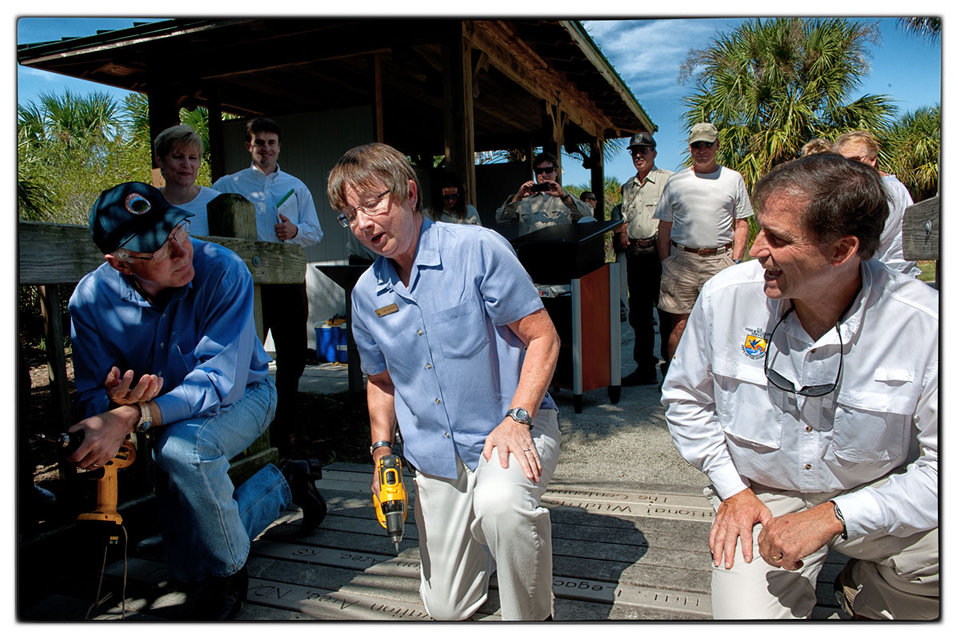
Secretary Salazar, Sue McMahon, and Director Dan Ashe

Secretary of the Interior Ken Salazar, from left, Sue McMahon, and U.S. Fish and Wildlife Service Director Dan Ashe place a plank to commemorate one of the four new refuges on the Centennial Trail Boardwalk at Pelican Island National Wildlife Refuge